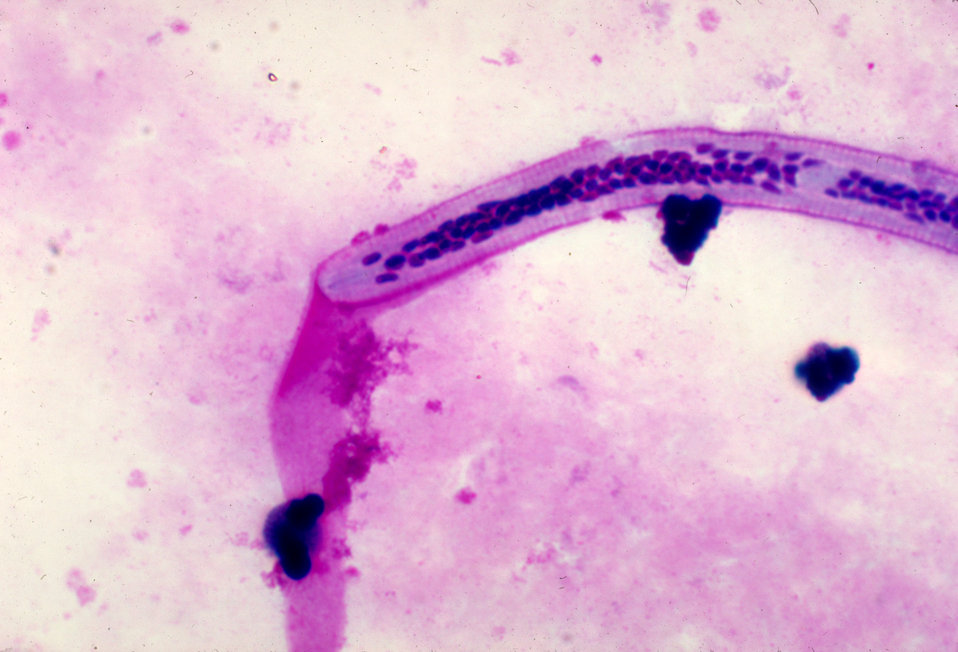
This is a micrograph of the anterior end of a Wuchereria bancrofti microfilaria in a blood smear using Giemsa stain.